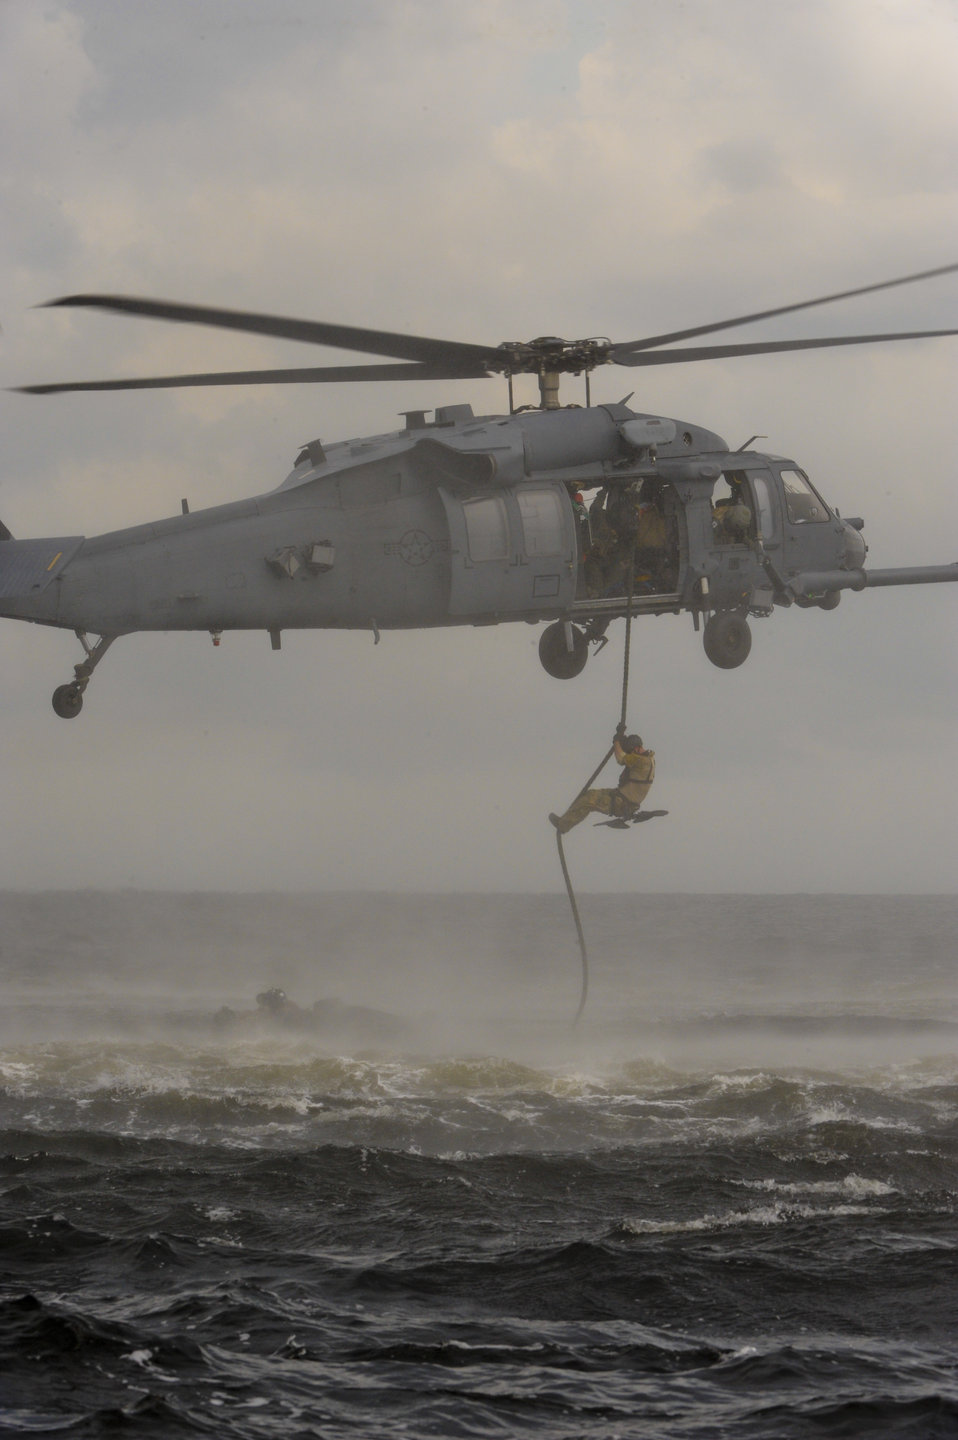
Water rescue

A pararescueman with the 38th Rescue Squadron at Moody Air Force Base, Ga., drops into the Gulf of Mexico during a water rescue exercise Aug. 14, 2012. During the exercise, pararescuemen had to locate downed victims several miles apart and provide self-aid and buddy care as needed.